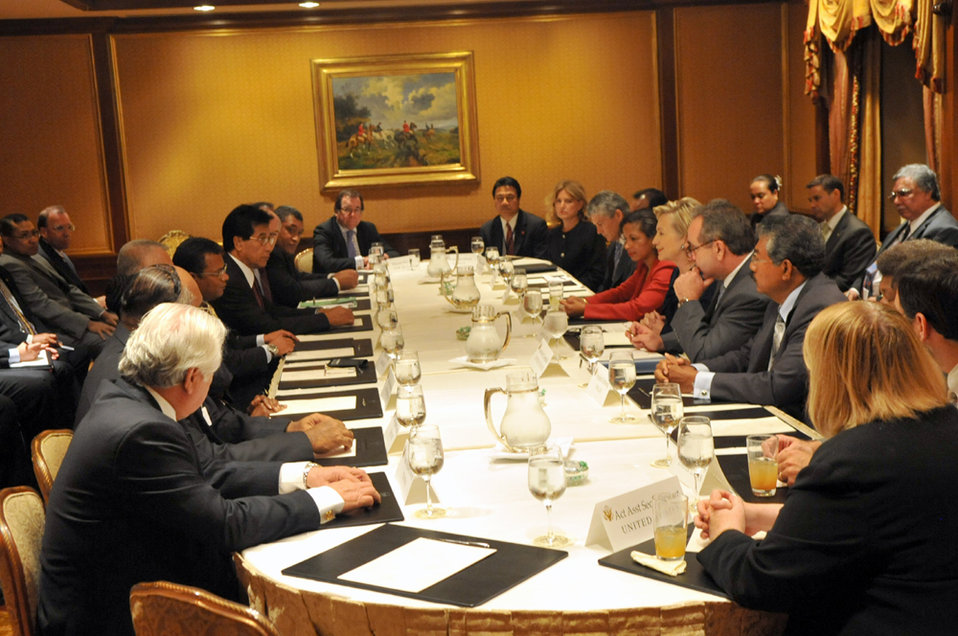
UNGA 2009: Secretary Clinton Meets With Pacific Island Leaders

U.S. Secretary of State Hillary Rodham Clinton meets with Pacific Island leaders at the Waldorf Astoria hotel during the 64th Session of the UN General Assembly in New York City, New York September 21, 2009.